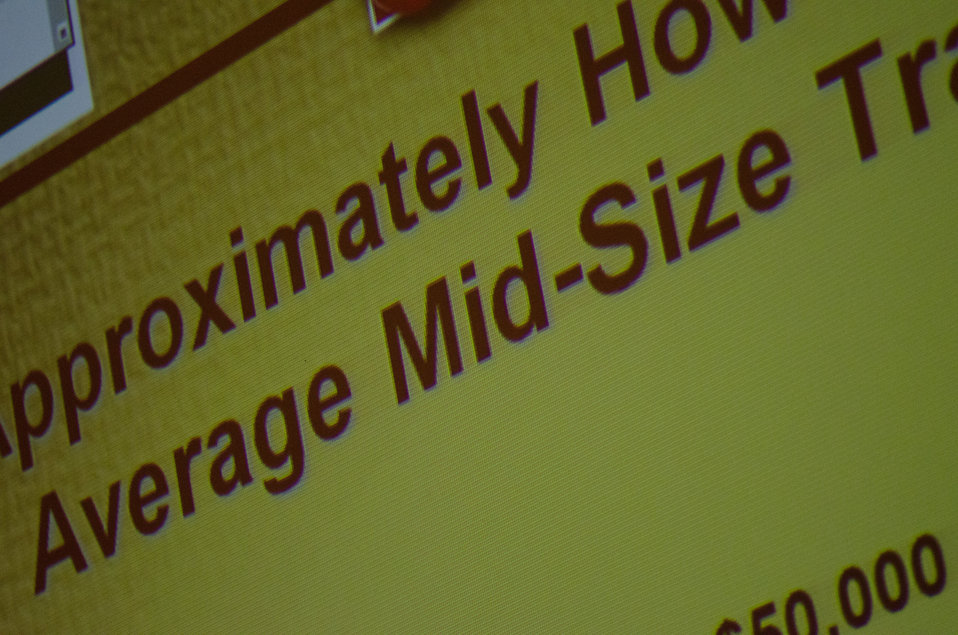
Approximately How Much does an Average Mid-Size Tractor Cost? was one question asked by U.S. Department of Agriculture (USDA) Deputy Secretary Kathleen Merrigan during her presentation of the “Know your Farmer Know your Food” initiative to students and faculty at the Animal Sciences / Agricultural Engineering Building at the University of Maryland, in College Park, MD, on Thursday, April 7, 2011. Deputy Secretary Merrigan’s interactive presentation utilized wireless polling in the lecture room to present questions to the audience who used handheld devices to choose from a list of multiple answers. Their answers were instantly tabulated, then Merrigan revealed their top choice on the screen, followed by the correct answer, usually revealing an error and misconceptions. Her talk covered support of local farmers; strengthening rural communities, promoting healthy eating, protecting natural resources; grants, loans and other support USDA provides as well as stories of innovation; industry and government cooperation; and careers opportunities in agriculture, ranching and the USDA.